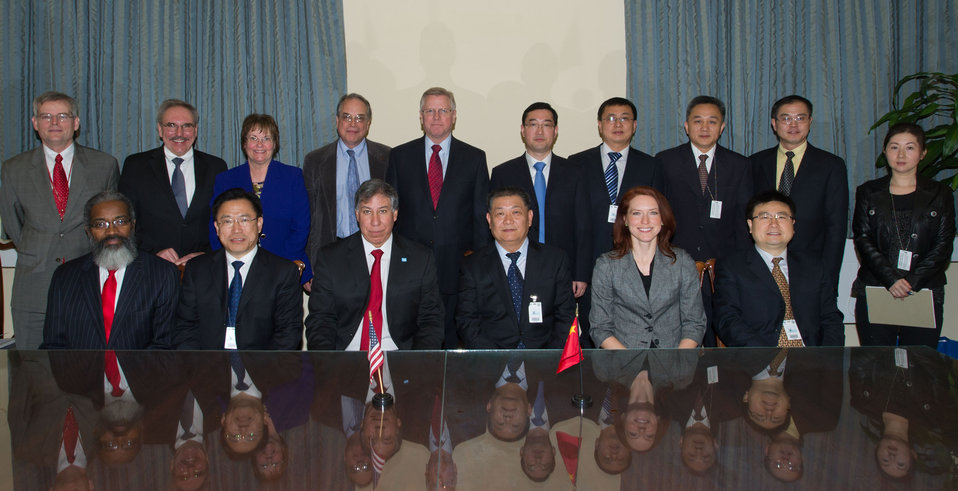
Agriculture Under Secretary for Marketing and Regulatory Programs (MRP) Ed Avalos hosted the General Administration of Quality Supervision, Inspection and Quarantine (AQSIQ) Vice Minister Yang Gang from China, seen here in a group photo of seated (left to right): Administrator
Animal and Plant Health Inspection Service (APHIS) Greg Parham, AQSIQ Director General General Office Li Yuanping, Agriculture Under Secretary MRP Ed Avalos, Vice Minister AQSIQ Yang Gang, Acting Agriculture Deputy Under Secretary MRP Rebecca Blue, and Deputy Director General Department of International Cooperation AQSIQ Zhang Baofeng. Standing (left to right): Animal and Plant Health Inspection Service (APHIS) Internal Service (IS) Russell Caplen, Foreign Agricultural Service Scott Sindelar, Foreign Agricultural Service Beverly Simmons, Director, Center for Plant Health and Science Technology Dr. Phillip Berger, Deputy Administrator Veterinary Services Dr. John Clifford, Deputy Director General Department of Supervision on Animal and Plant Quarantine, AQSIQ Zhao Zenglian, Director (Vice Minister’s Secretary) General Office, AQSIQ Wang Liangjun, U.S. Los Angeles, CA based Chinese official Yan Jie, U.S. New York City, NY based Chinese official Zhang Jiaming, and Deputy Director Department of International Cooperation, AQSIQ Fan Leilei, on Tuesday, Feb. 14, 2012, in Washington, D.C.